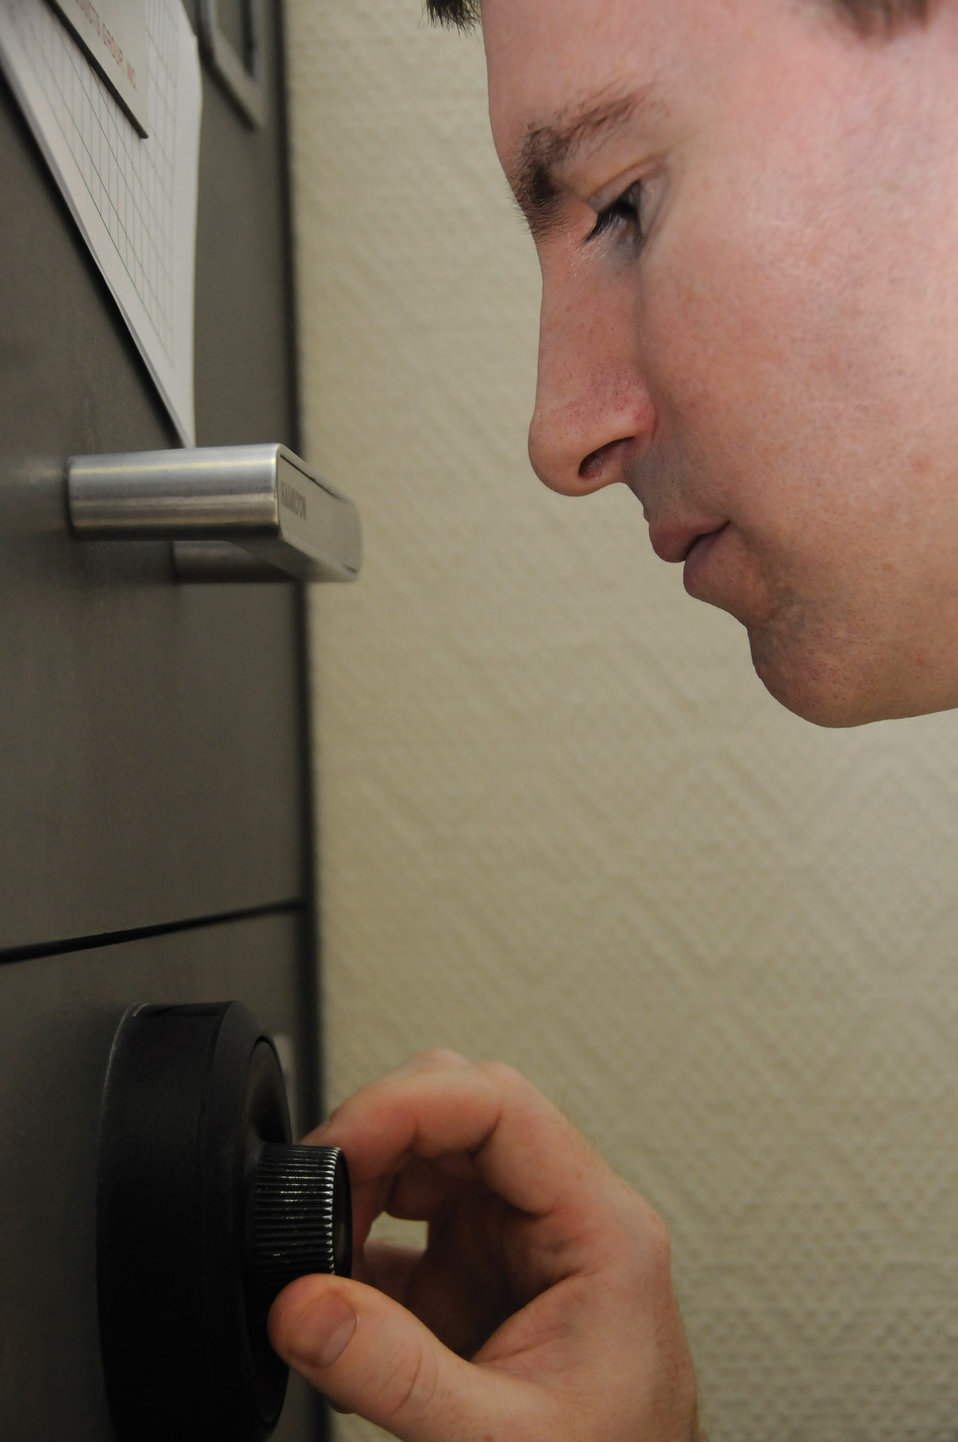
Moving the money behind the mission

Tech. Sgt. Ray Quenneville opens a safe in Southwest Asia Sept. 8. As paying agent, he must account for all the money being deposited or cashed out to customers, which can include large sums of currency. Sergeant Quenneville is a paying agent for the 379th Expeditionary Comptroller Squadron.